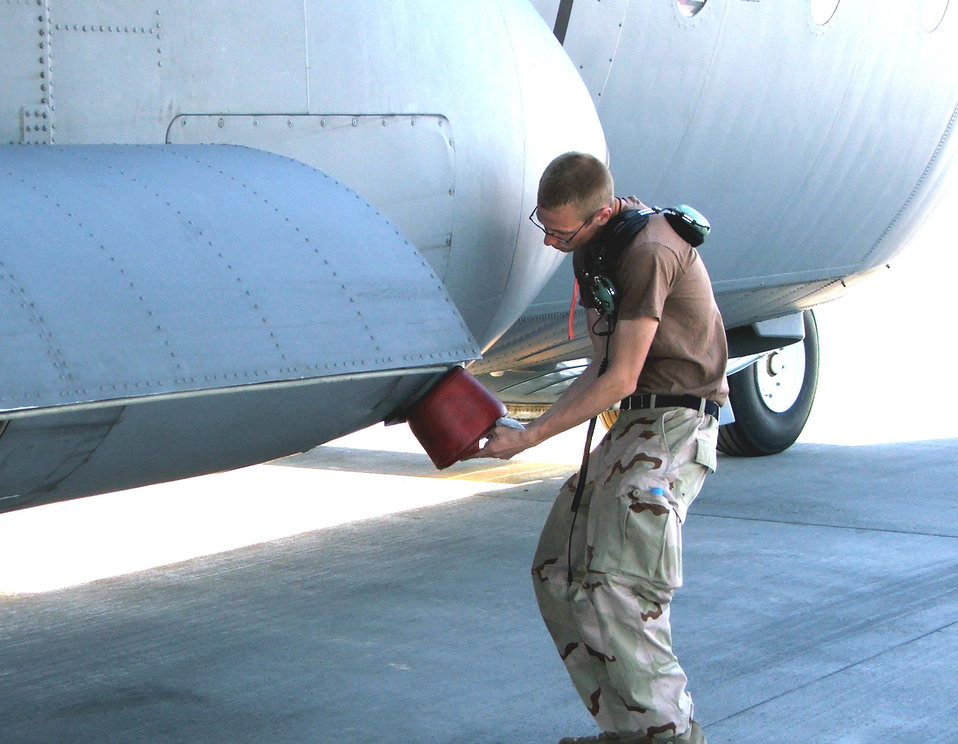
C-130 maintainers keep mission-capable rates high

KARSHI-KHANABAD AIR BASE, Uzbekistan -- Senior Airman Christopher Green puts a plug into a C-130 Hercules exhaust port here after the recovery of a C-130 that returned from a mission April 14. He is a C-130 crew chief deployed from Elmendorf Air Force Base, Alaska.